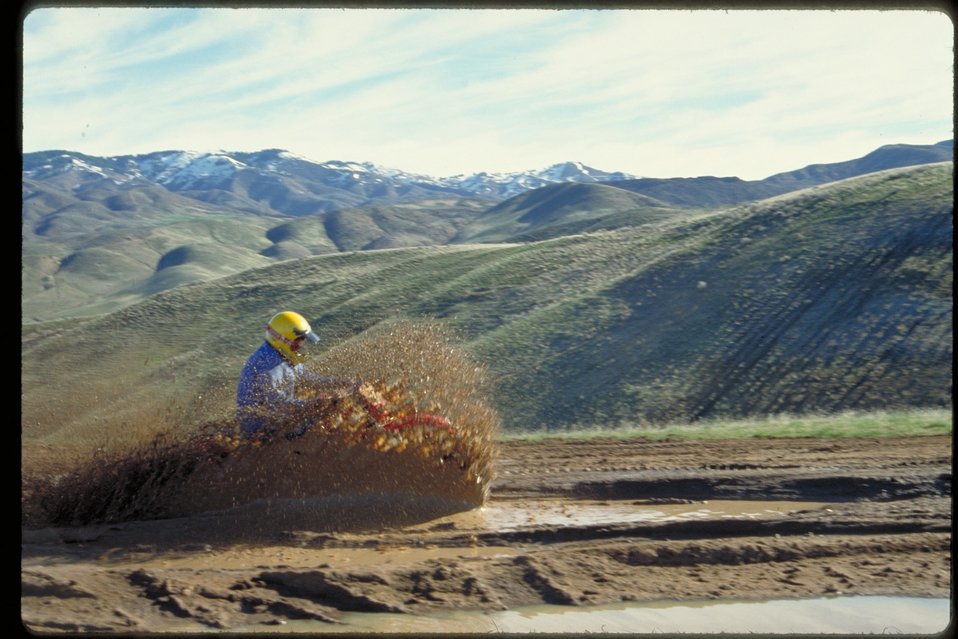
Motocross in mud Boise Front Four Rivers Field Office LSRD Lower Snake River District